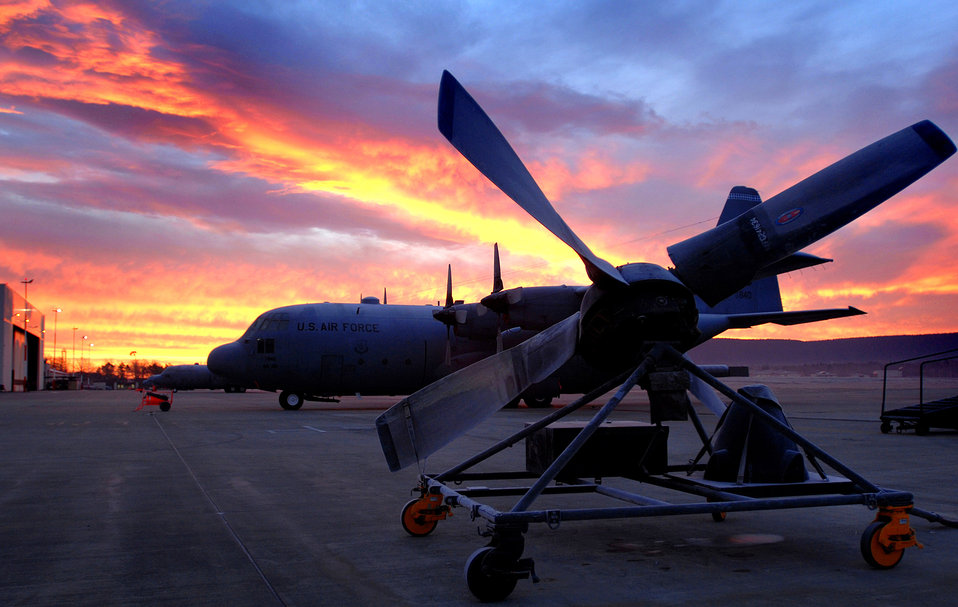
Time to go to work

The propeller blades for a C-130 Hercules aircraft sit on the flight line Jan. 14 at Ramstein Air Base, Germany, waiting to be installed.